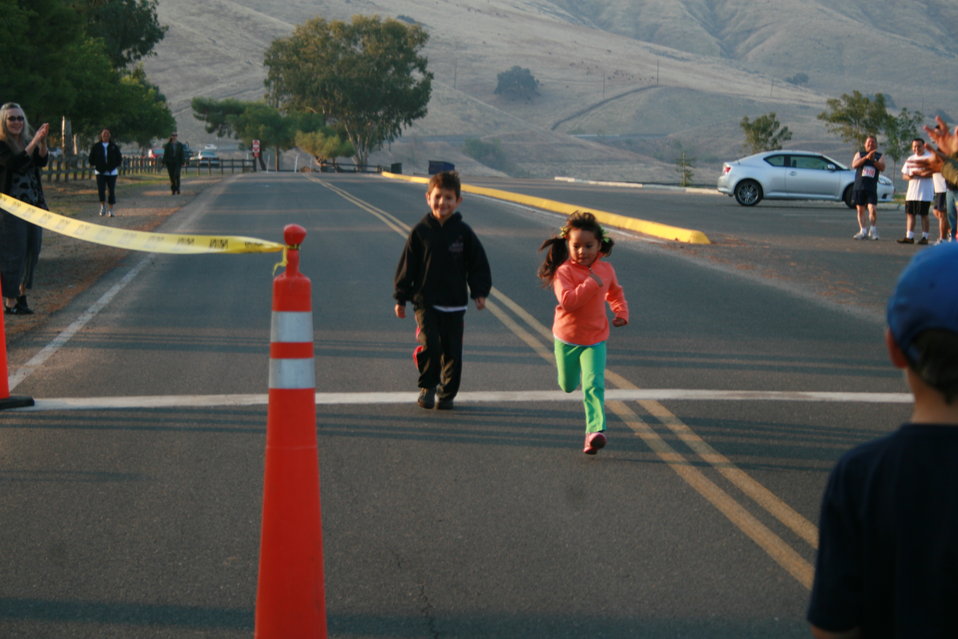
First-ever Fall Fitness Day held at Success Lake

Bystanders cheer on two kids crossing the finish line during a fun run at Success Lake in Porterville, Calif., Oct. 22, 2011. The run was part of the first-ever Fall Fitness Day at the lake, hosted by the City of Porterville Parks and Leisure Department and the U.S. Army Corps of Engineers Sacramento District. The event supports President Barack Obama’s America’s Great Outdoors initiative to re-connect Americans with the outdoors.